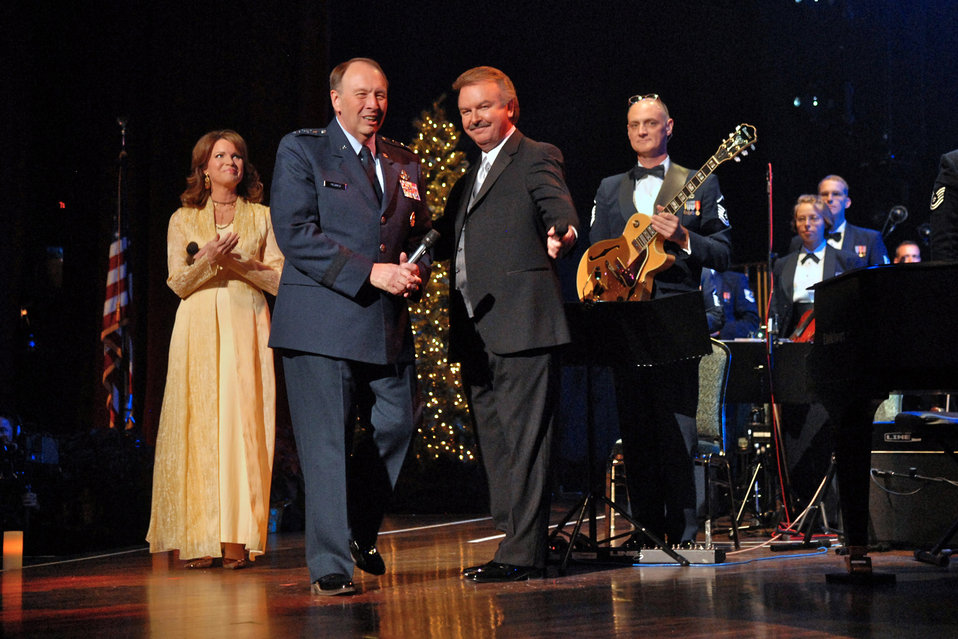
Wynonna Judd joins Reserve Band for TV broadcast

Lt. Gen. Charles E. Stenner Jr. is received by hosts Lorrain Crook and Charlie Chase during the Holiday Notes from Home concert recorded Dec. 9 in Nashville, Tenn. The concert is annual holiday event recorded at the Grand Ole Opry House as a tribute to military men and women serving around the world. The show airs on Great American Country and on American Forces Network channels throughout December. General Stenner is the commander of the Air Force Reserve Command.